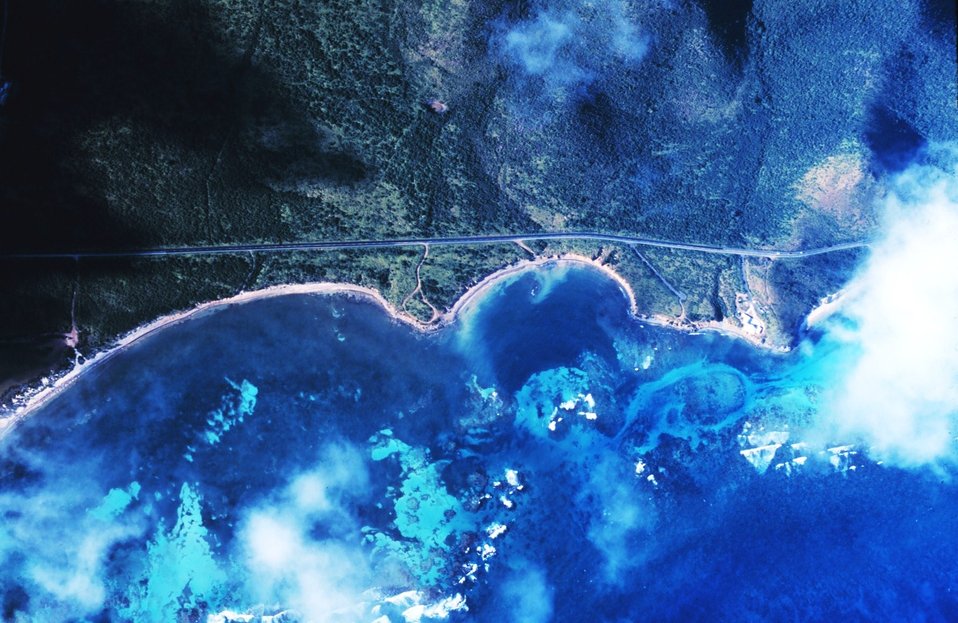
Aerial view of St. Croix coastline showing highway and reef.